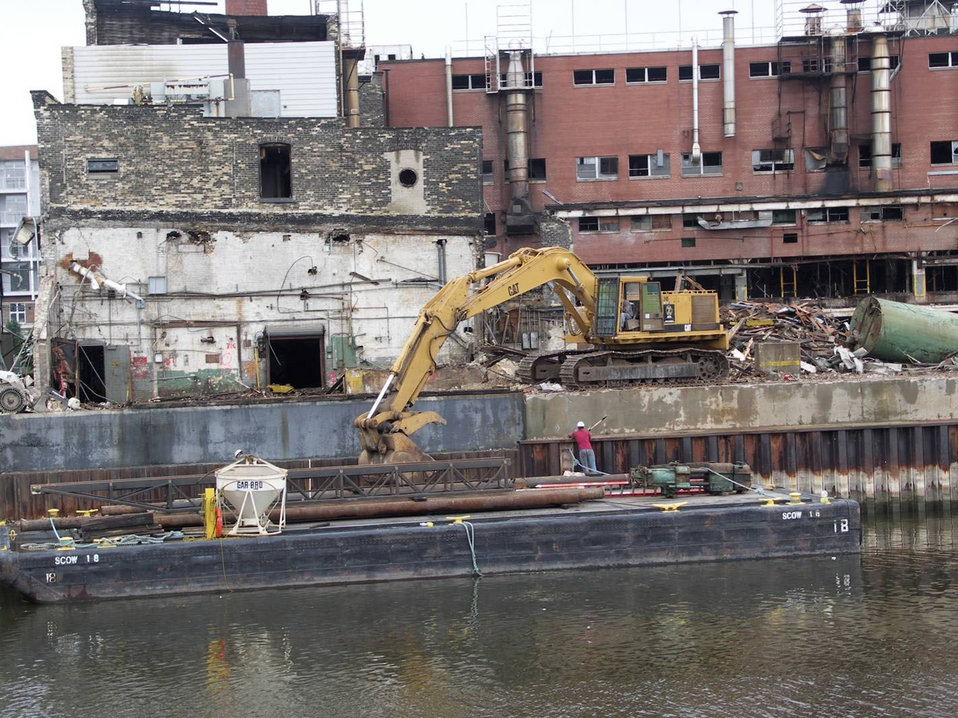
BEFORE: Milwaukee, WI

This former parking lot in Milwaukee, WI was contaminated with many hazardous substances before it was selected for Brownfields grant funding by EPA.